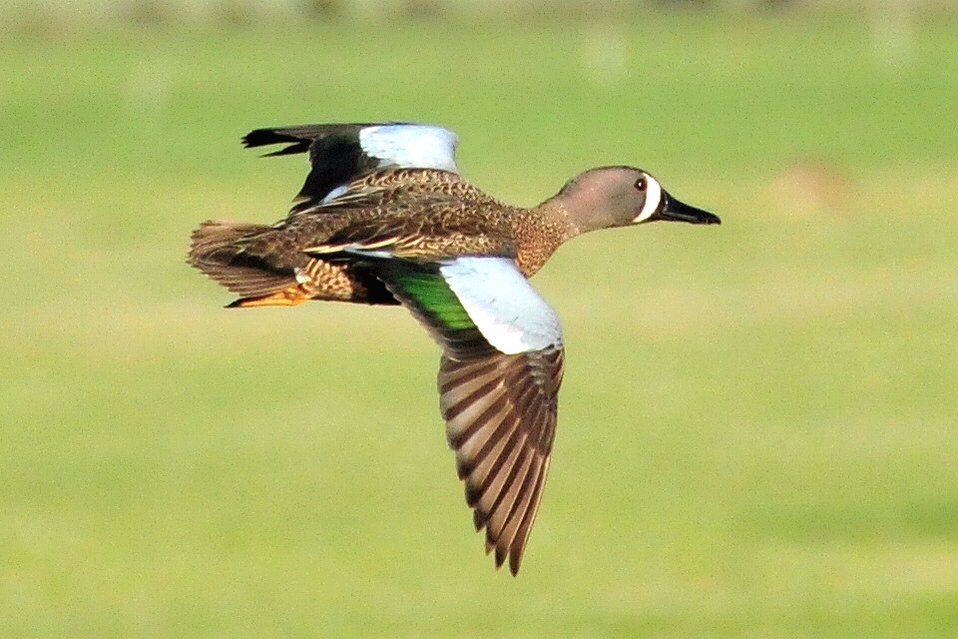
Blue-winged teal drake in flight Lacreek NWR